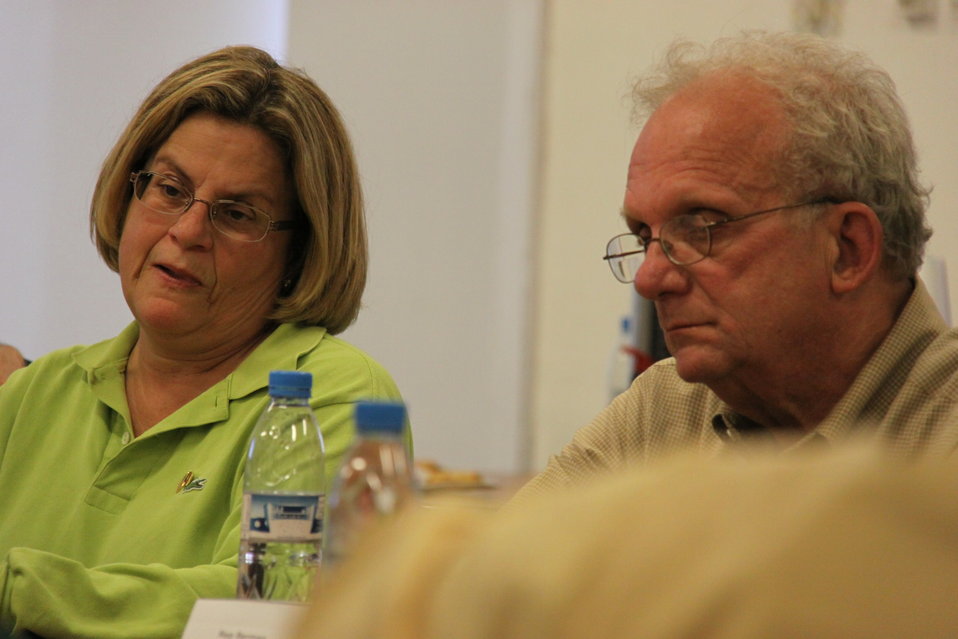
Meeting with Local Leaders in Kandahar